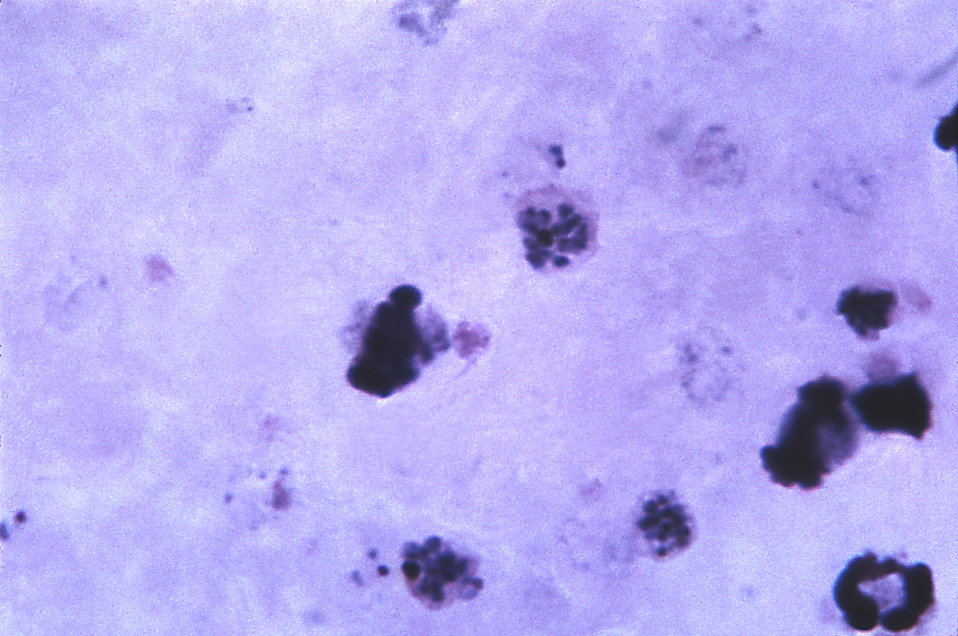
This thick film micrograph depicts 3 mature P. vivax schizonts, 12 merozoites, and a ring trophozoite; Magnified 1125x.